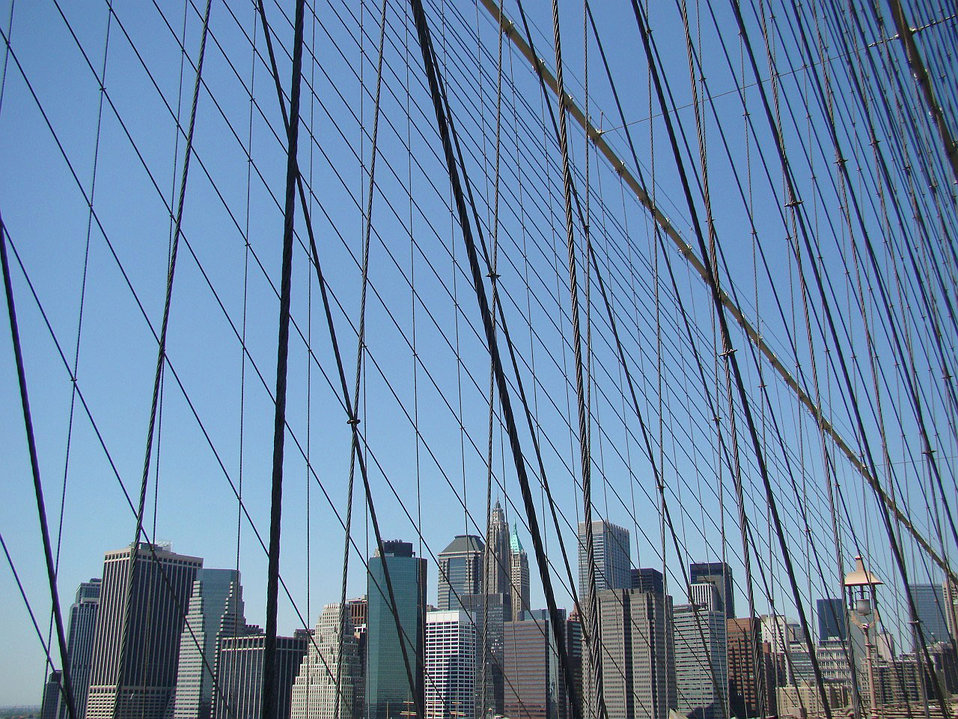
Downtown view

New york downtown view from brooklyn bridge.